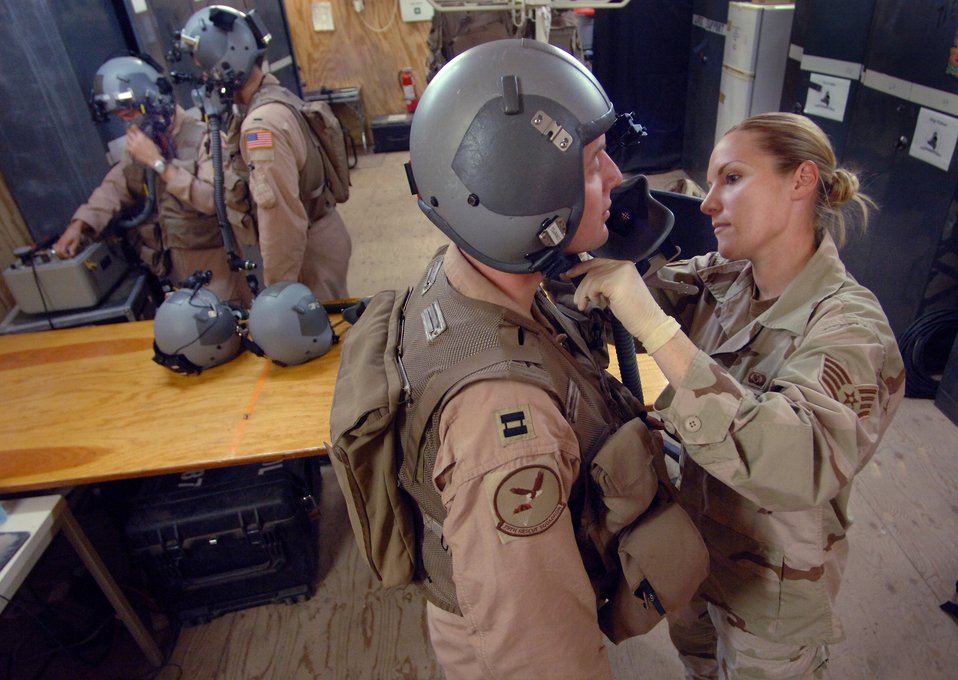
Serving through the season: Staff Sgt. Elizabeth Eggel

Staff Sgt. Elizabeth Eggel fits an oxygen mask for navigator Capt. Jesse Enfield before a refueling mission Dec. 17. As the only life support technician deployed to the Horn of Africa, the six-year veteran from Davis-Monthan Air Force Base, Ariz., provides support to more than 40 Air Force, Navy and Marine aircrew members based at Camp Lemonier, Djibouti.